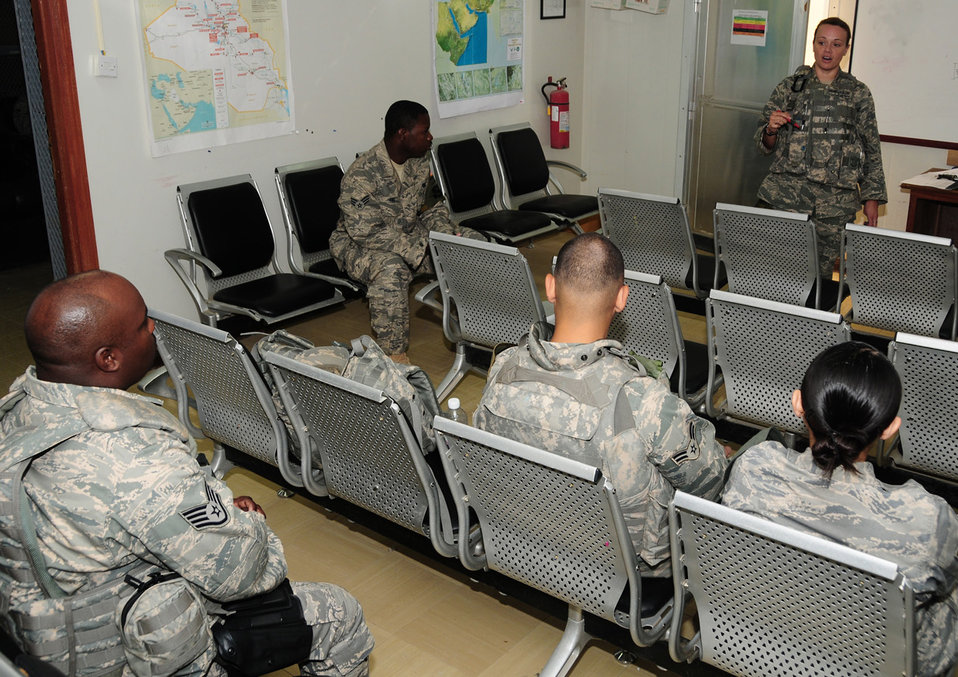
Security team provides safety net for Airmen

Staff Sgt. Valerie Brunelle-Allen answers last minute questions before arming up for a mission April 15 at an air base in Southwest Asia. She is a security escort team member with the 386th Expeditionary Security Forces Squadron. When not on a mission, the SET members spend their time training or reviewing procedures.